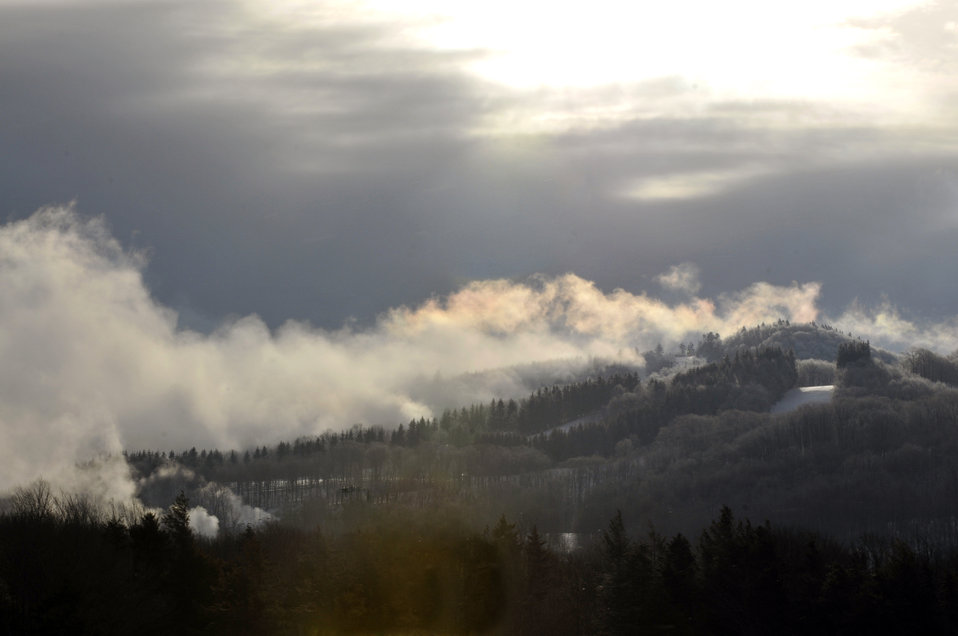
The mist rises over the Monongahela National Forest in Davis, West Virginia on January 29, 2010.